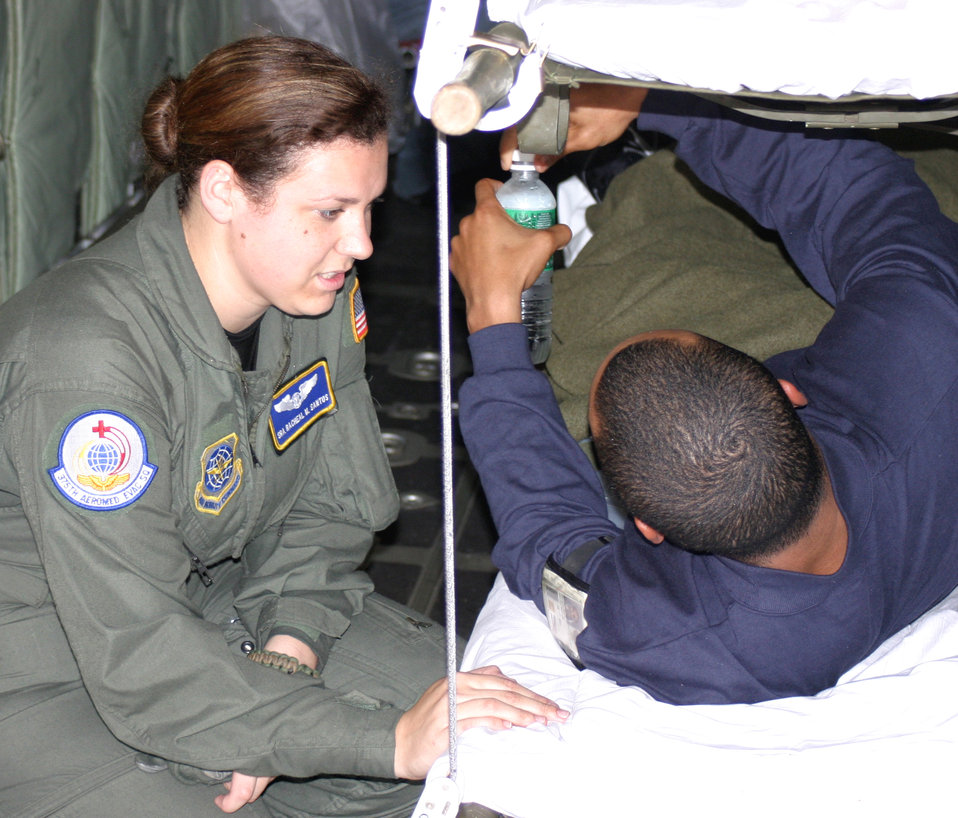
Team effort brings America's wounded troops home

ANDREWS AIR FORCE BASE, Md. -- Senior Airman Racheal Santos comforts a patient during a recent aeromedical evacuation mission onboard a C-130 Hercules.